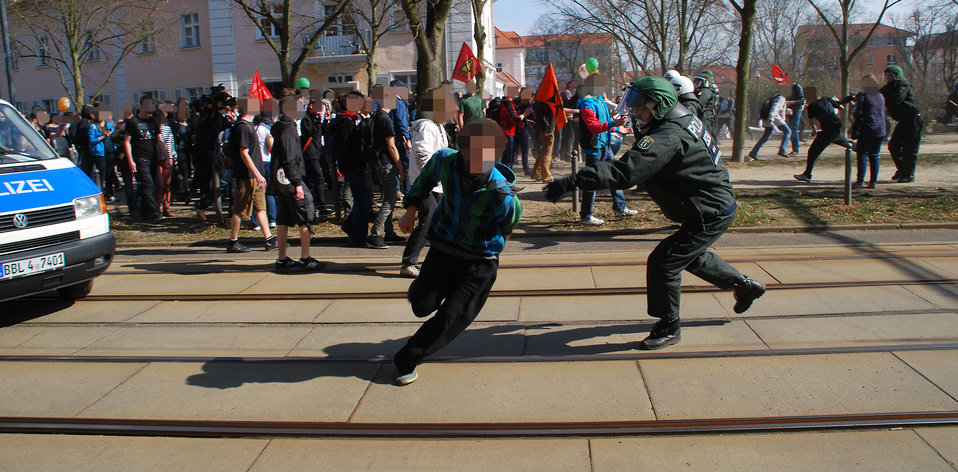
Proteste gegen den Nazi-Aufmarsch am 24.3.2012 in Frankfurt (Oder)